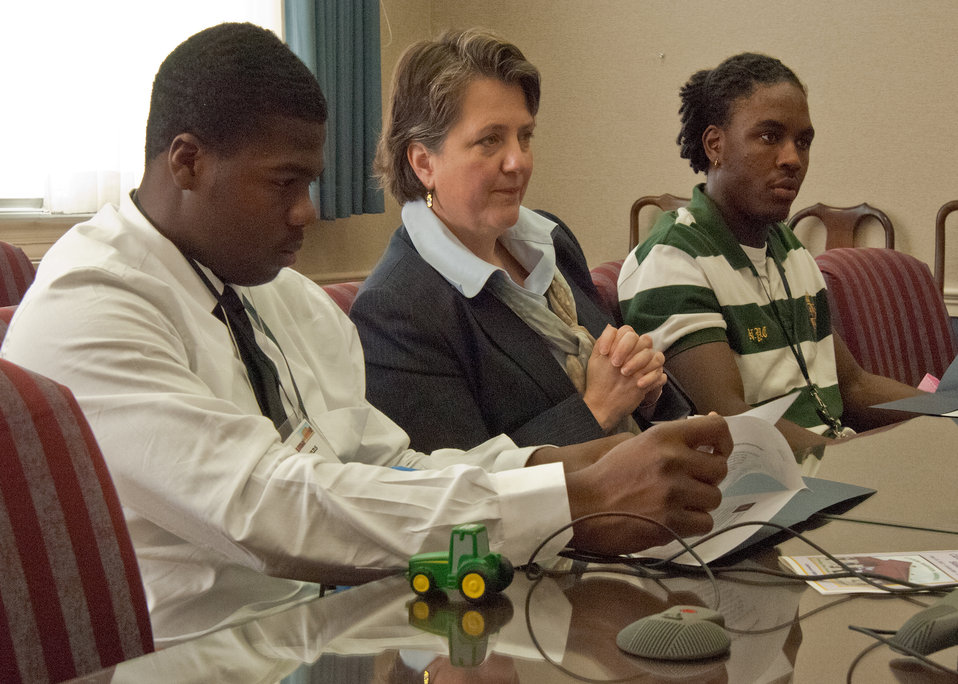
While on a Career Opportunity, seniors from Calvert High School Calvert, Texas tour the television studio United States Department of Agriculture (USDA) as part of a senior trip sponsored by the Farm Service Agency “Ag in the Classroom” program Monday, May 23, 2011, in Washington, DC. Seniors from Calvert High School Calvert, Texas Jamarion Ramirez (left), Agriculture Deputy Secretary Kathleen Merrigan (center), and Andre Ross (right) listen to questions posed by other senior classmates from their school.